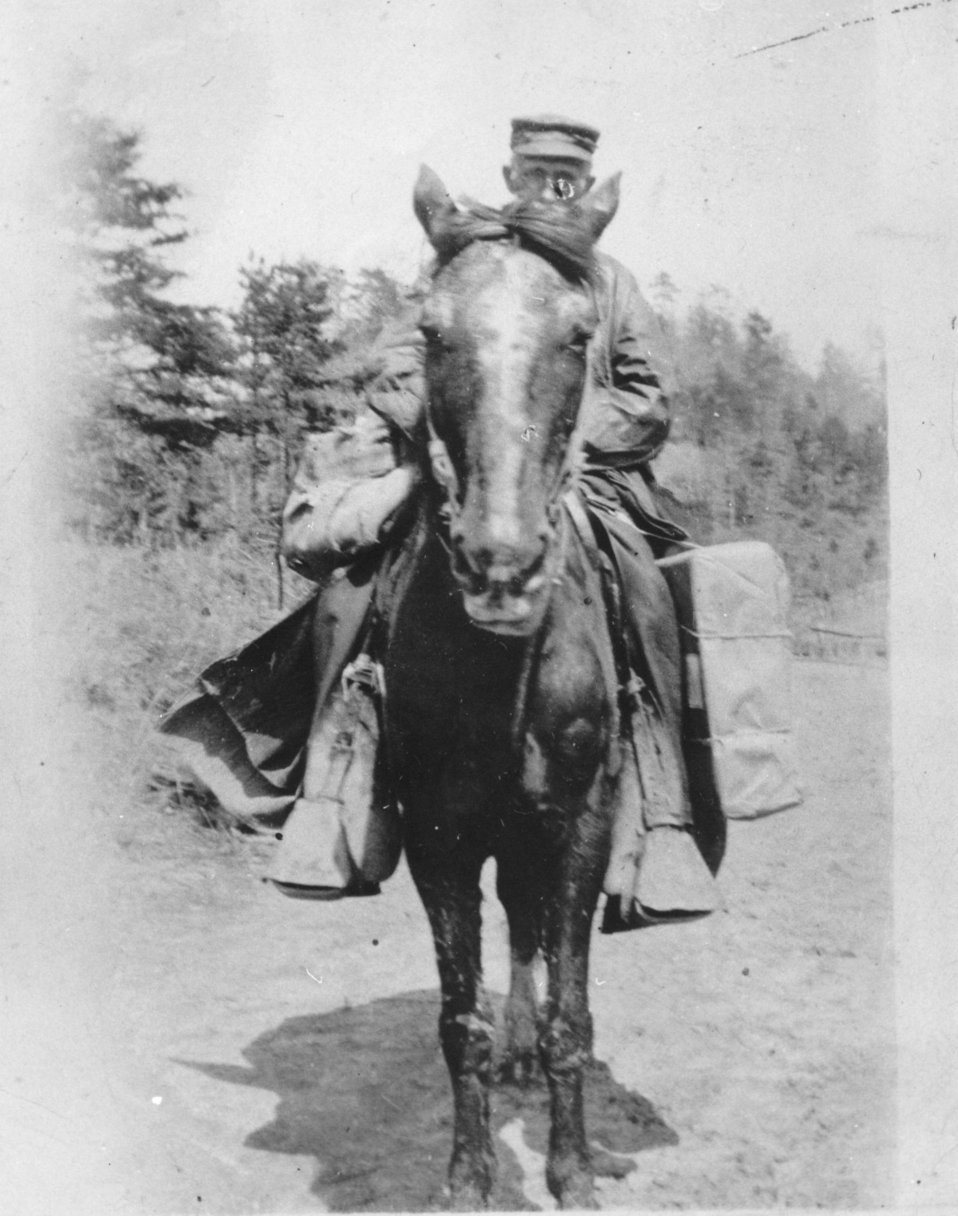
Early settlers at Oak Ridge